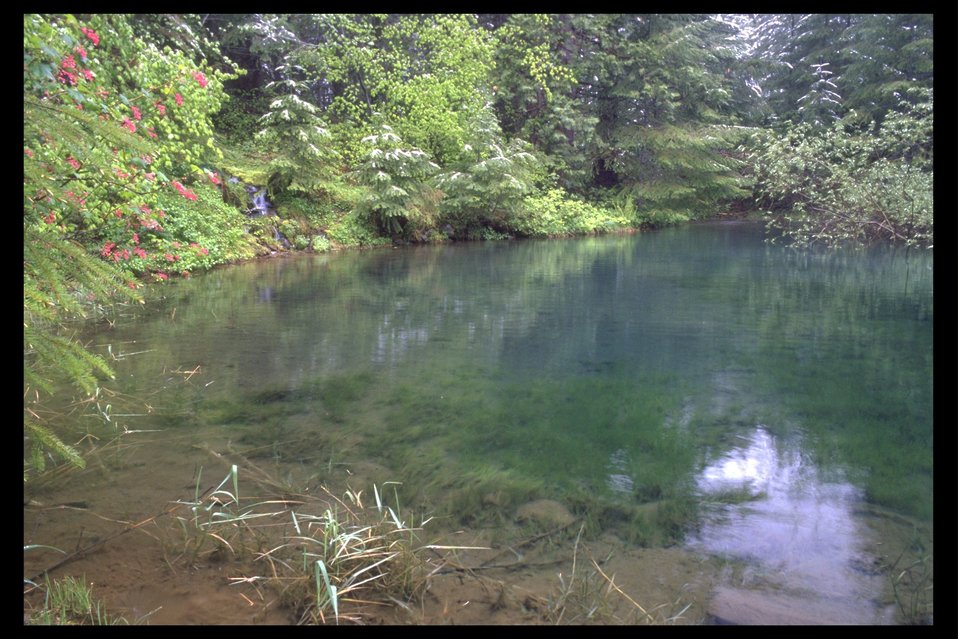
Pond near Red Rock Canyon, a tributary to Lost Creek Lake.